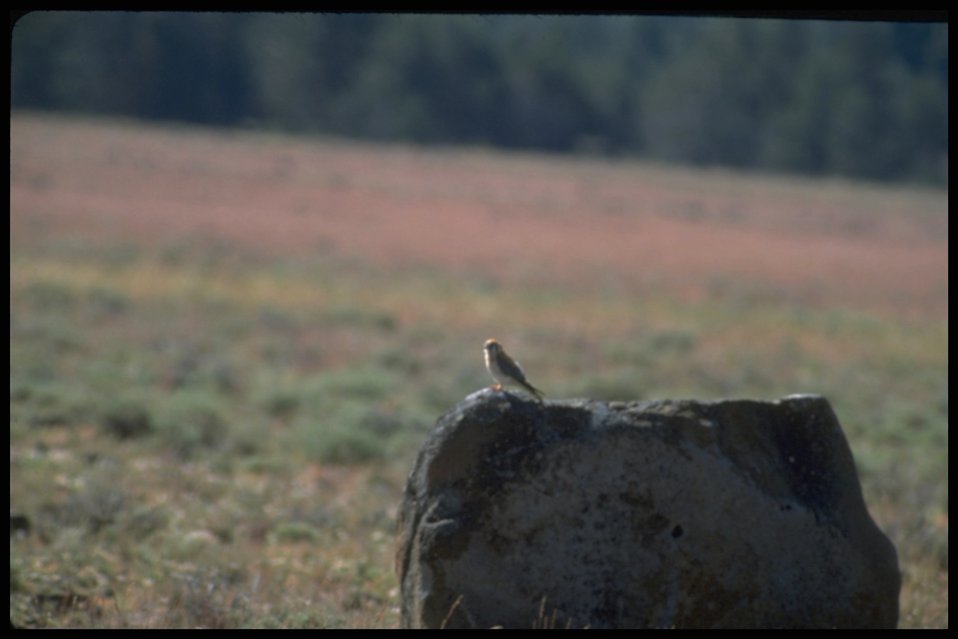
Far shot of American Kesterel, Lakeview District.